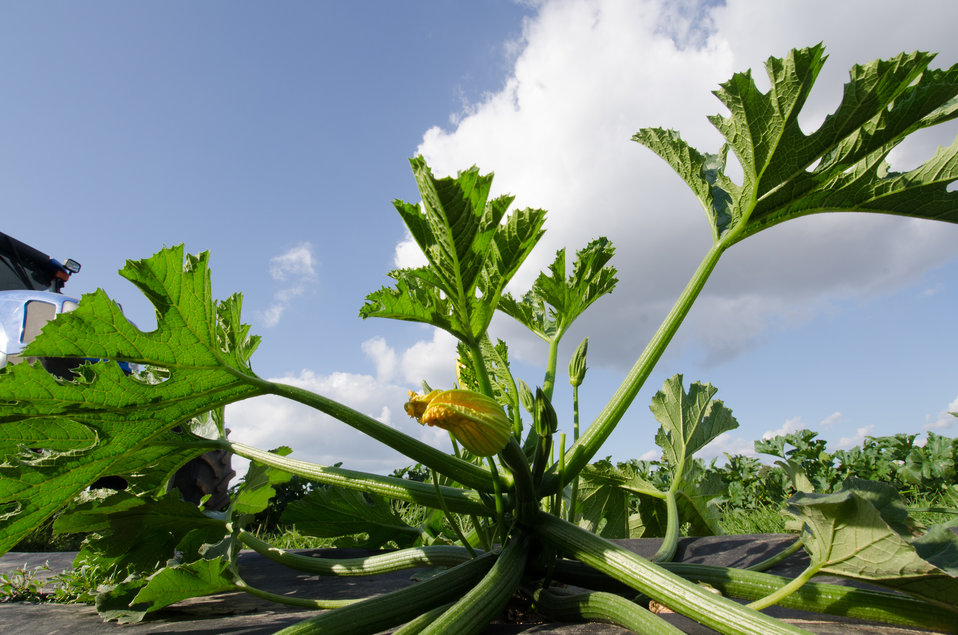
Kirby Farms third-generation family farm in Mechanicsville, VA, uses micro irrigation (drip watering) and plastic mulch (row covering) to efficiently grow green zucchini squash, on Friday, Sept 20, 2013. Water is pumped through a filtration/regulator system to flexible distribution pipes and hard connectors. Emitter hoses can be driven in where needed. Pressurized hoses emit water at a very slow rate near the base of the plants. Computers or timers provide additional controls. A micro irrigation system, also known as drip or trickle irrigation, is used to water directly to the plant root zone utilizing surface or subsurface applicators. For more information please see www.nrcs.usda.gov/Internet/FSE DOCUMENTS/nrcs141p2 024038...
Plastic sheeting is a form of mulch. It conserves soil moisture and reduces energy
use associated with irrigation, moderates soil temperature, provide erosion control, suppresses weed growth, facilitates the establishment of vegetative cover, improves soil quality, and reduces airborne particulates.